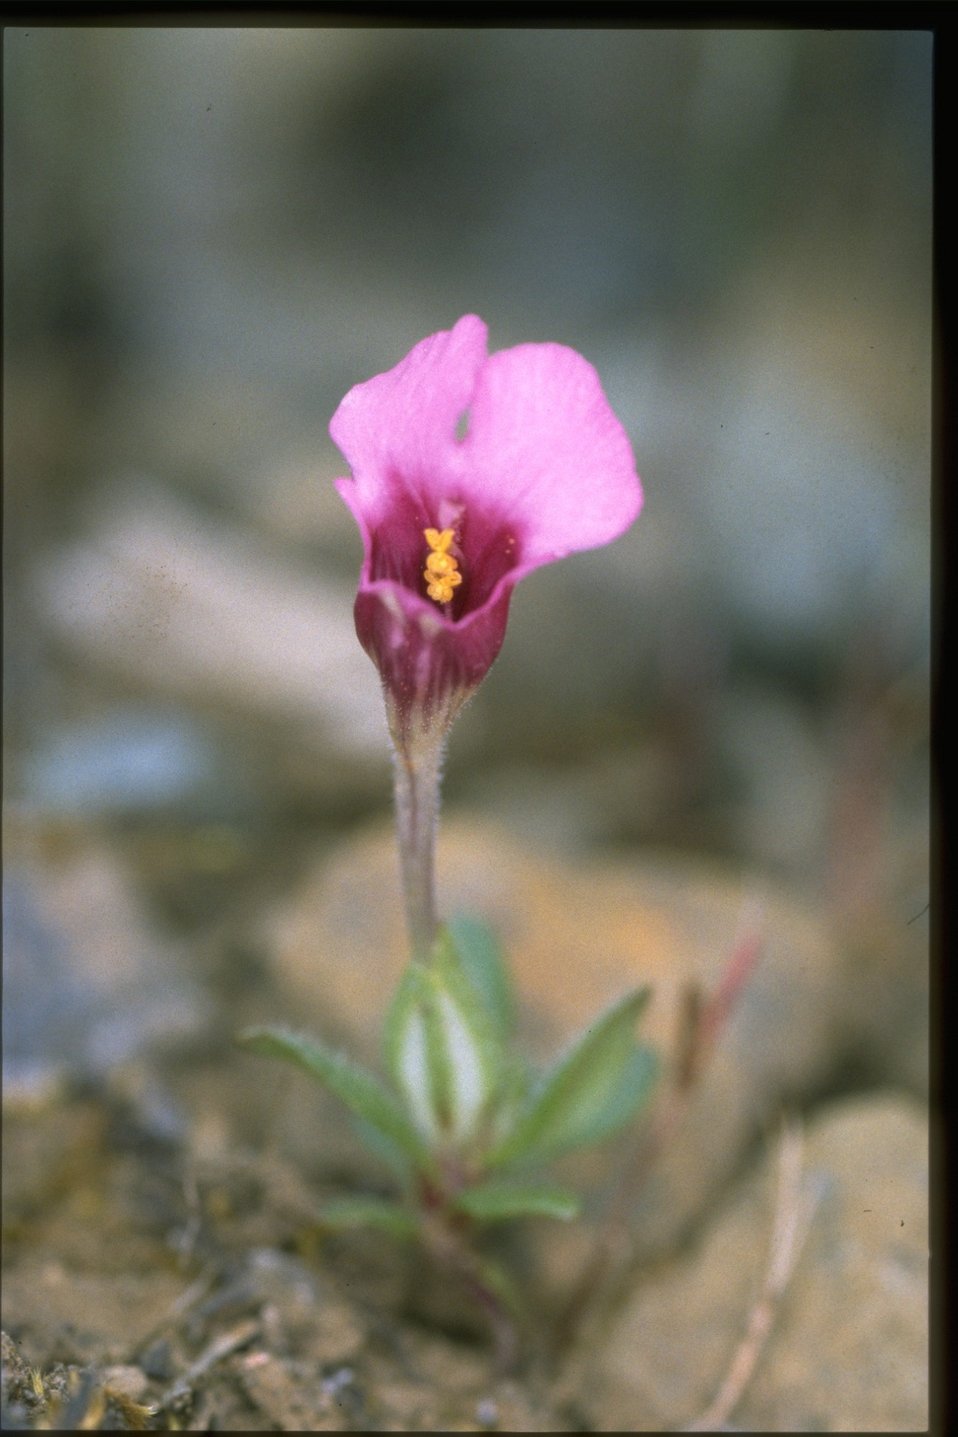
Medium shot of Douglas Monkey Flower, Mimulus douglasii.